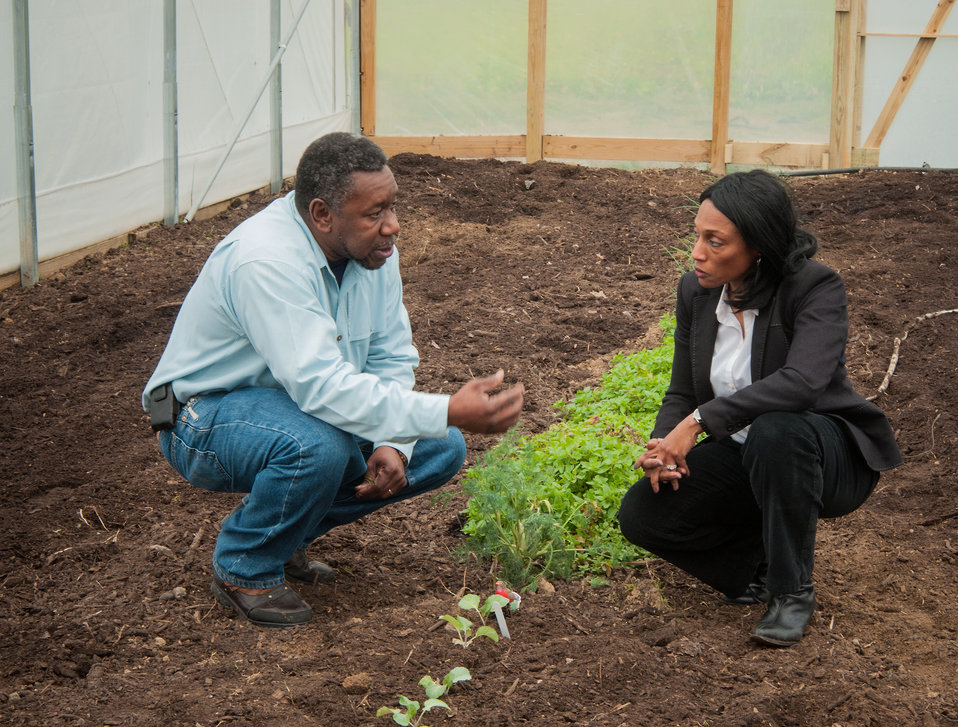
U.S. Department of Agriculture (USDA) Arkansas Strike Team Leader Charlie Williams and USDA Farm Service Agency (FSA) Arkansas State Executive Director Linda Newkirk discuss crops the East Arkansas Enterprise Community, (EAEC) Inc. in Forrest City, AR will demonstrate for food production on small plots growing in a high tunnel house on Mar. 4, 2013. The EAEC is one of 42 community-based organizations located in high poverty areas in the United States to benefit from the Arkansas Delta Seeds of Change (ADSOC) Initiative. USDA in partnership with Heifer International (an International organization whose mission is to work with communities to end hunger and poverty and care for the Earth) and various for-profit and non-profit organizations have organized the Seeds of Change Implementation Plan to use sustainable agriculture to build food systems in the Arkansas Delta.